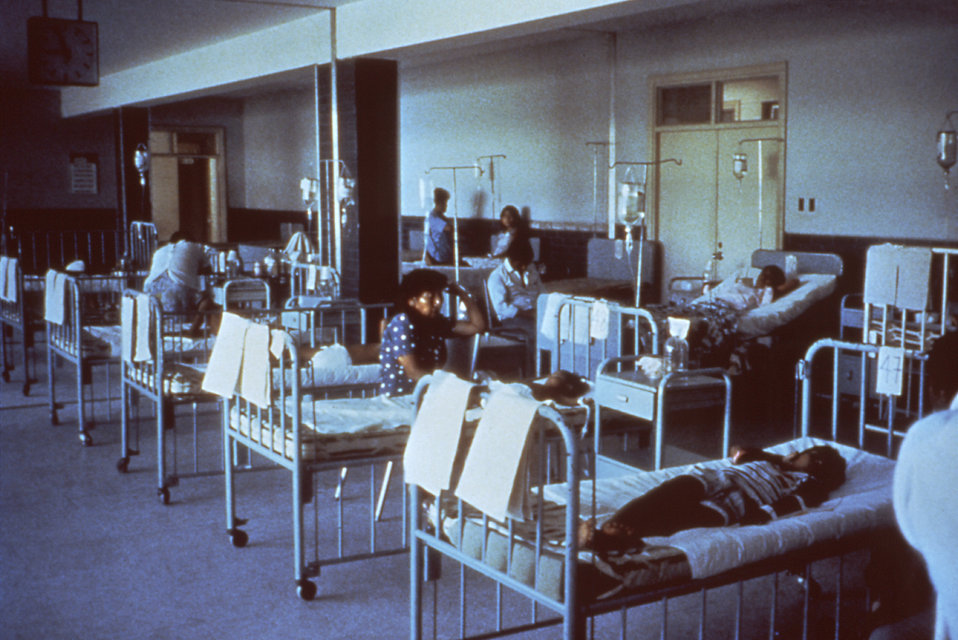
This was a Peru hospital waiting room that had to be converted to an emergency cholera ward during an epidemic.